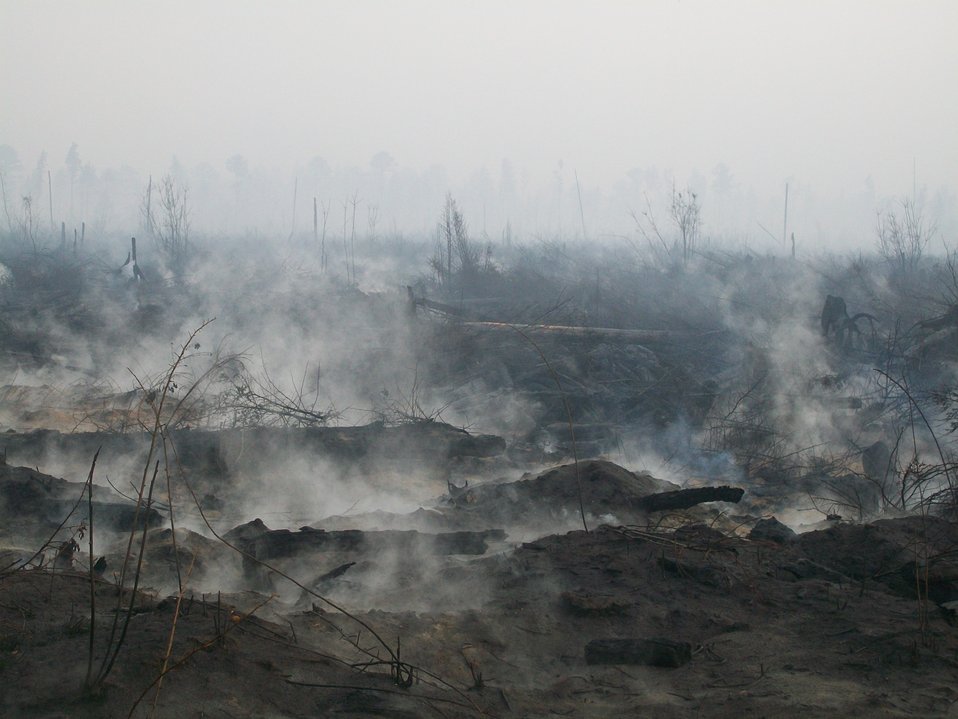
Smokin' peat

Suffolk, VA, Aug. 2011: Smoke rises from fire burning deep in peat organic soils at the Lateral West Fire on Great Dismal Swamp National Wildlife Refug.